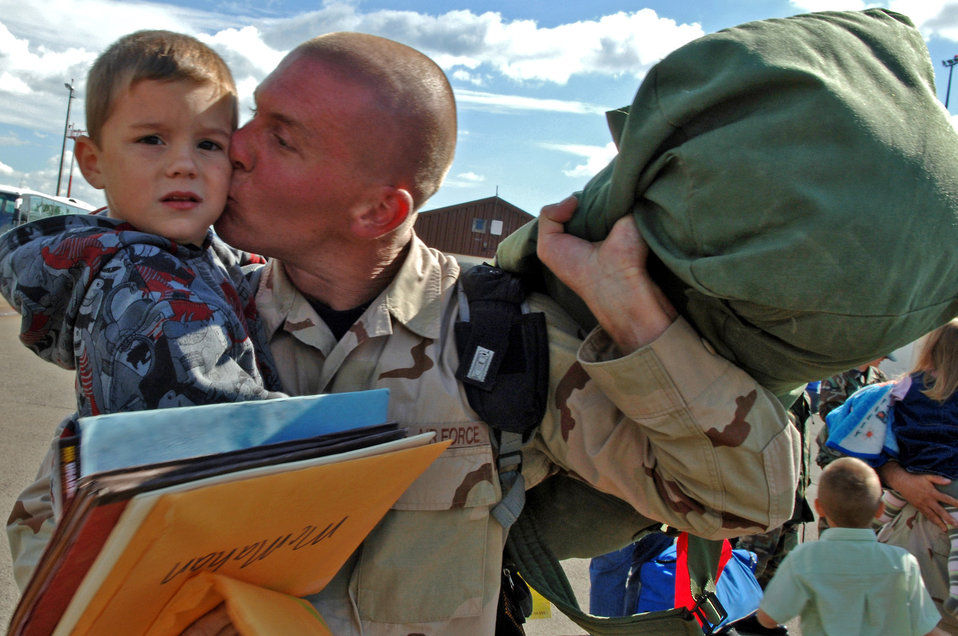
Home at last

Senior Airman Johnny McMahan, with the 435th Vehicle Readiness Squadron at Ramstein Air Base, Germany, kisses his son Zeffrey after just returning from a deployment to Balad Air Base, Iraq.